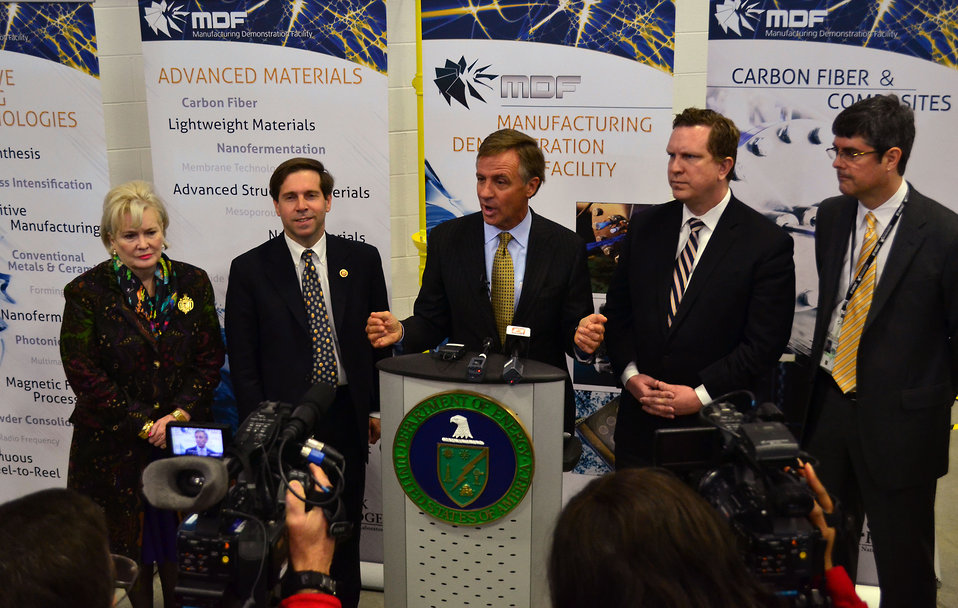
Carbon Fiber Technology Facilty Open House Oak Ridge Tennessee